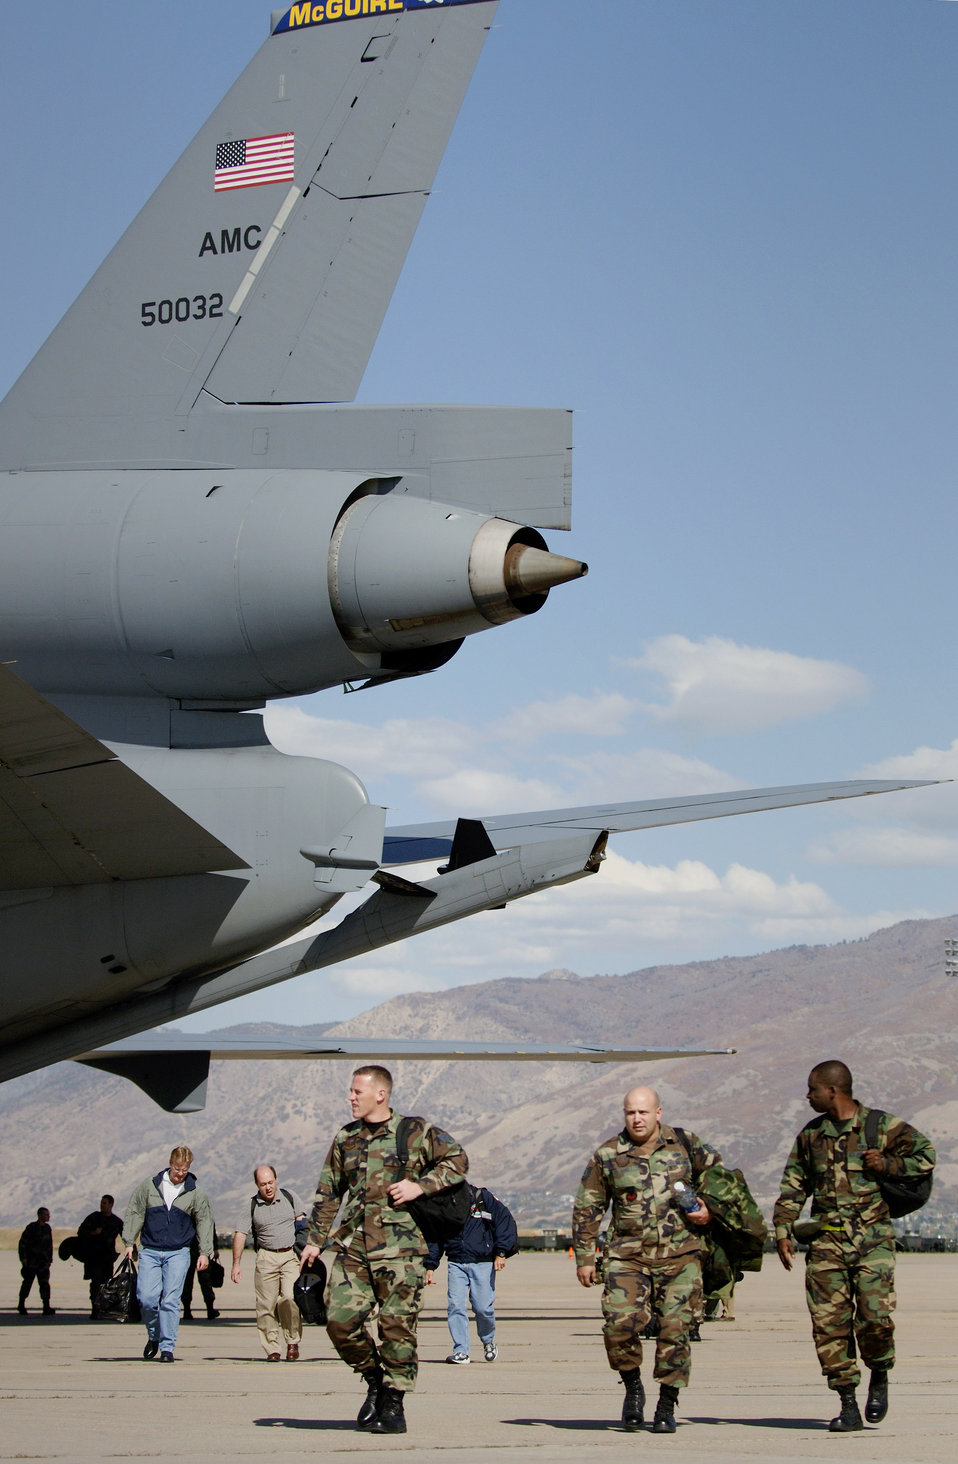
Combat Hammer

HILL AIR FORCE BASE, Utah -- Airmen from Langley Air Force Base, Va.,